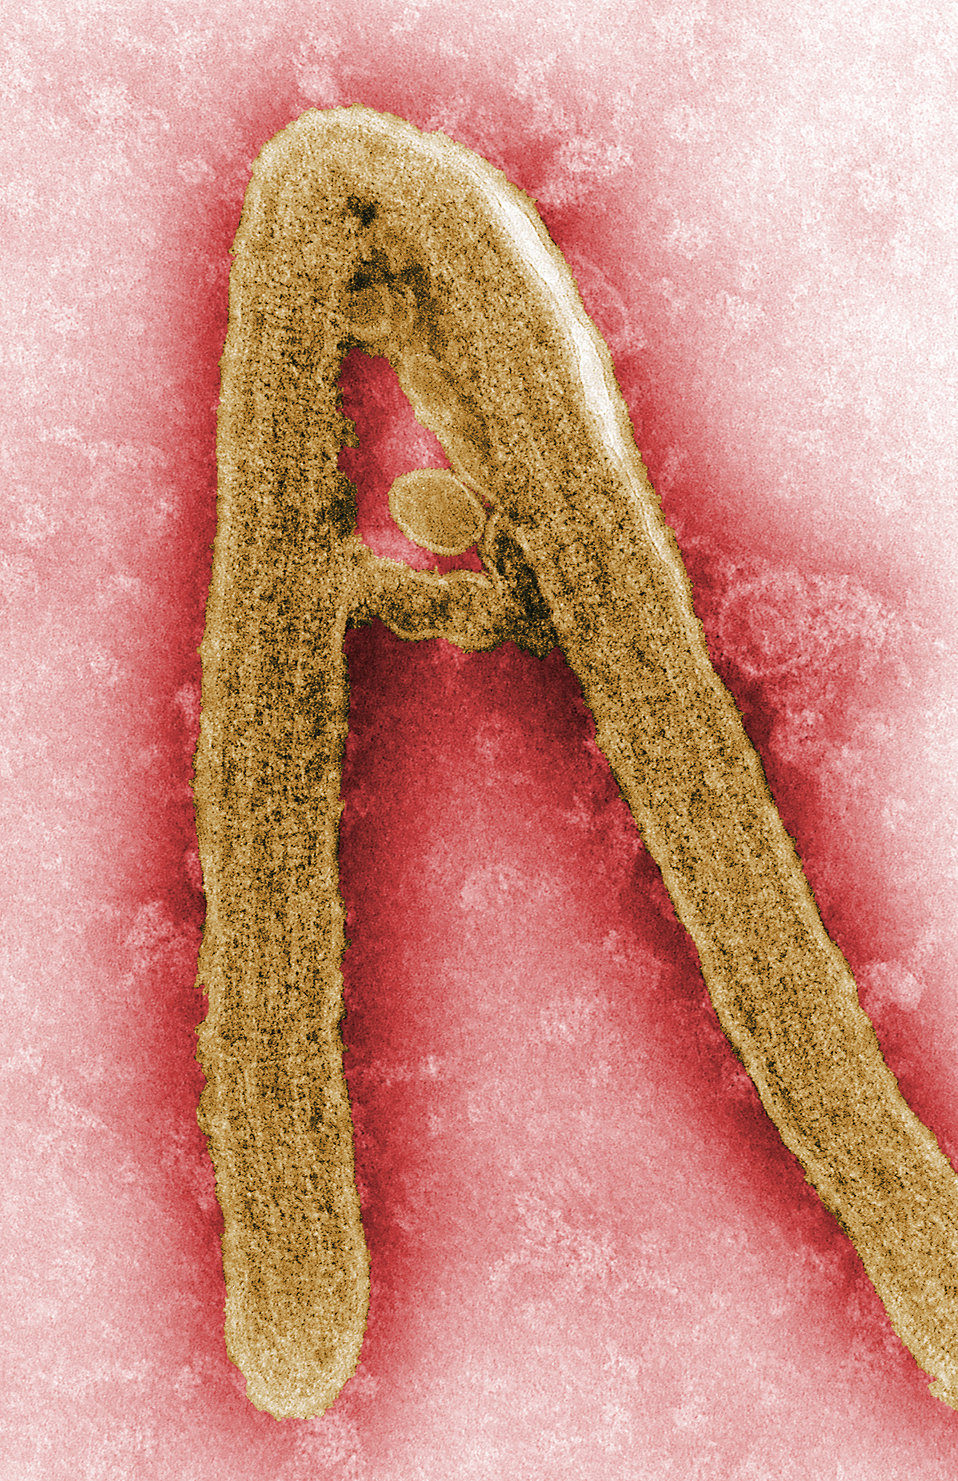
This colorized negative stained transmission electron micrograph (TEM), captured by F.A. Murphy in 1968, depicts a Marburg virus virion, which had been grown in an environment of tissue culture cells. Marburg hemorrhagic fever is a rare, severe type of hemorrhagic fever which affects both humans and non-human primates. Caused by a genetically unique zoonotic (that is, animal-borne) RNA virus of the filovirus family, its recognition led to the creation of this virus family. The four species of Ebola virus are the only other known members of the filovirus family. See PHIL 7219 for a black and white version of this image.